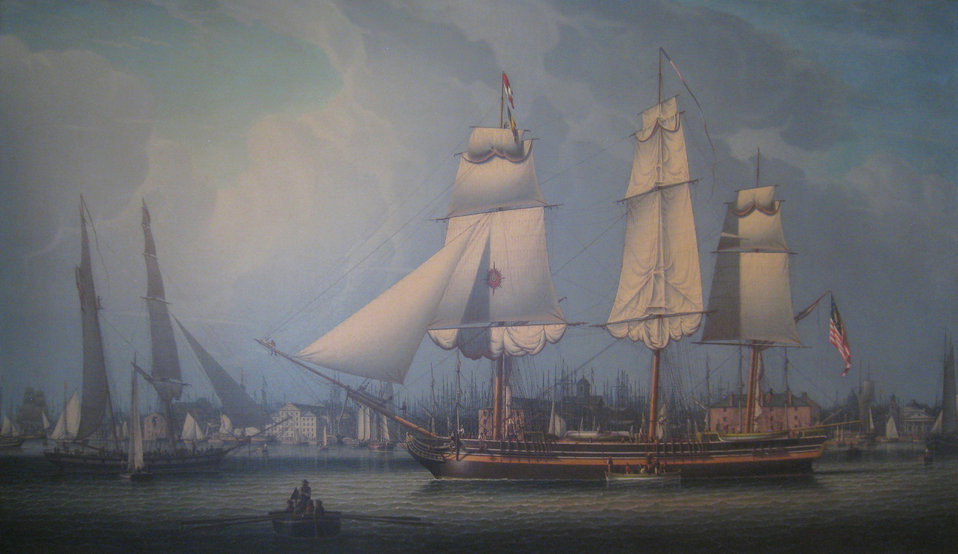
'Wharves of Boston' by Robert Salmon, 1829 - Old State House Museum, Boston, Massachusetts, USA.